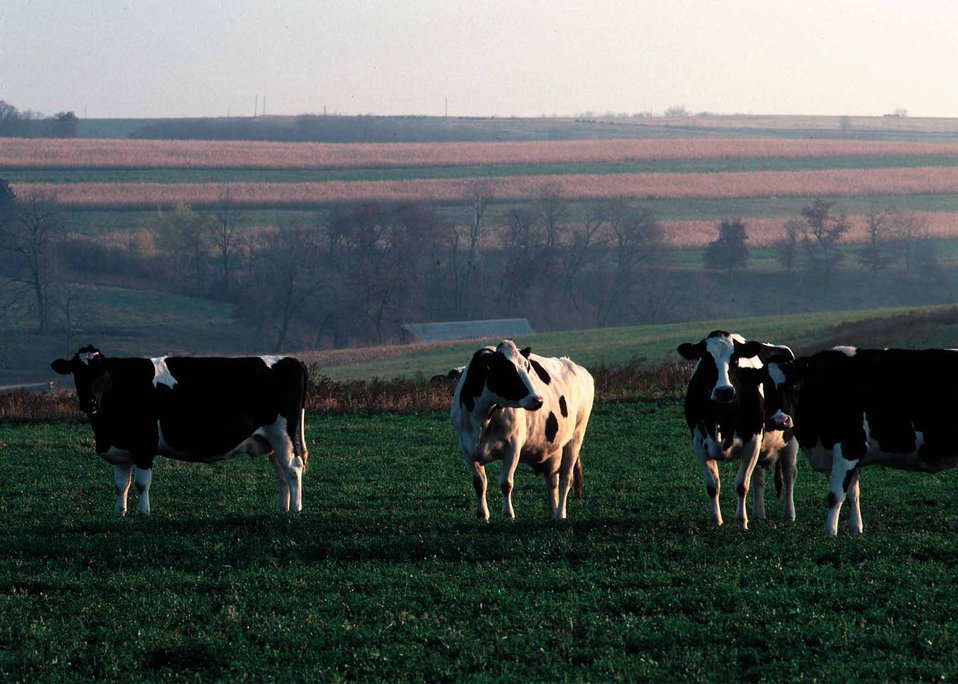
Dairy operation with Holstein cows on alfalfa pasture combines with contour stripcropping in background to protect highly erodible land in northeast Iowa.